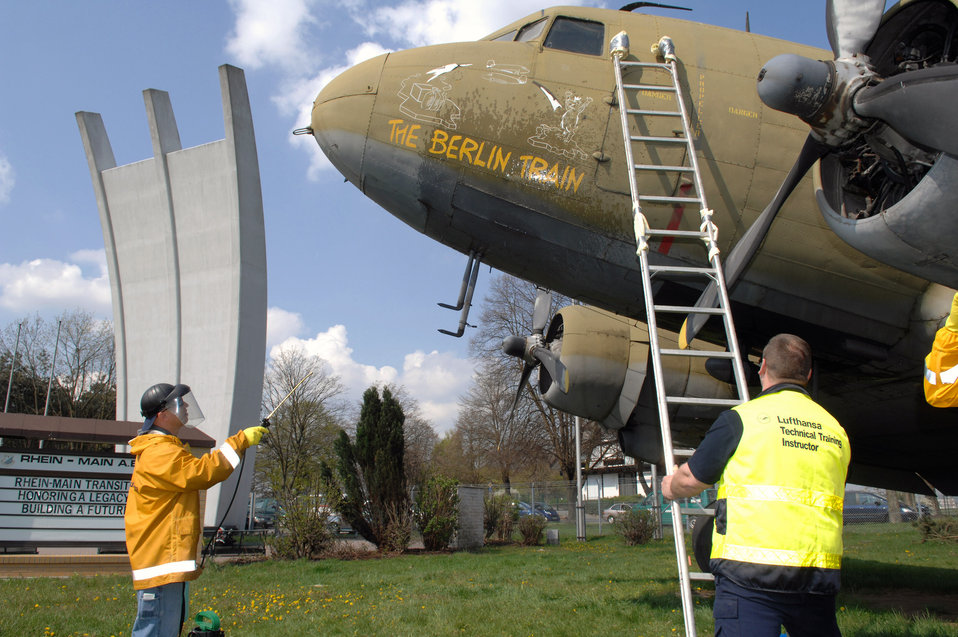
Airmen help restore Berlin Airlift memorial

Staff Sgt. Kevin Cloyd rinses the nose art on a static C-47 on display at the Berlin Airlift Memorial site of the former Rhein Main Air Base near Frankfurt International Airport in Germany. Sergeant Cloyd and a team of approximately 30 volunteers from Ramstein AB spent three days cleaning the display aircraft for refurbishing in preparation for a Berlin Airlift 60th Anniversary Celebration to take place there in June. Sergeant Cloyd is an aircraft maintenance crew chief at Ramstein AB.